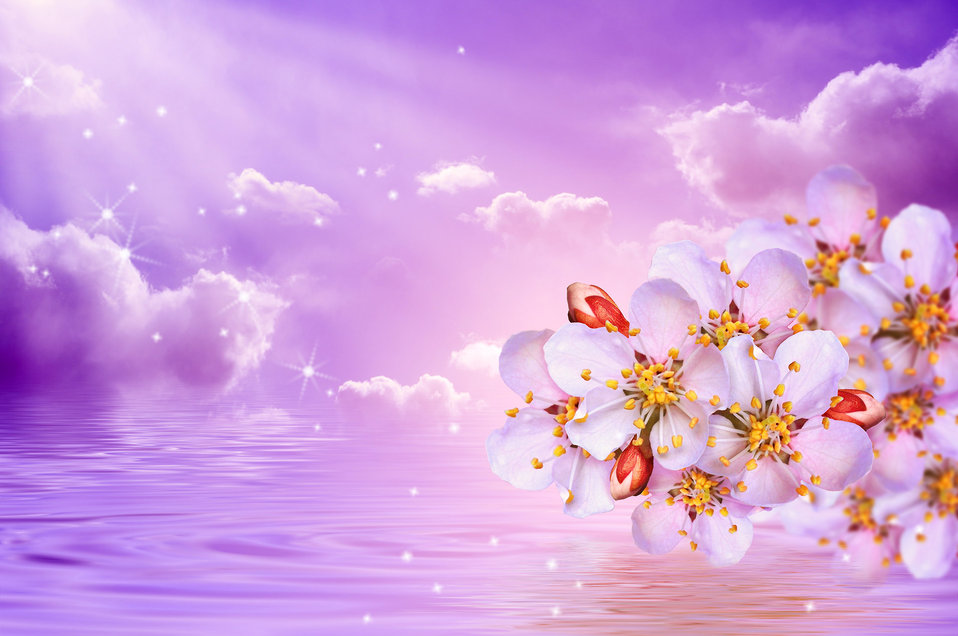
Spring flowering

Bright landscape with flowers of apricot against a beautiful sky. spring blooms..